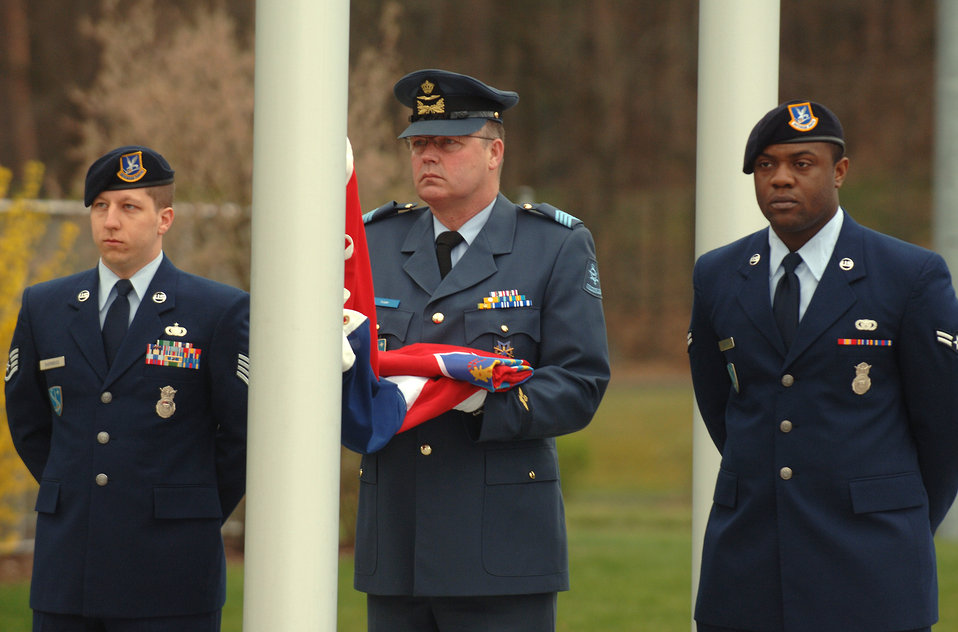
NATO ceremony

Staff Sgt. Leonard Sherwood (left) and Airman 1st Class Willie Johnson (right) join Royal Netherlands Air Force Sergeant Major Martin Cuiter to hoist the Croatian flag during a ceremony April 8 at Ramstein Air Base, Germany, marking the accession of Croatia and Albania as the 27th and 28th members of NATO.